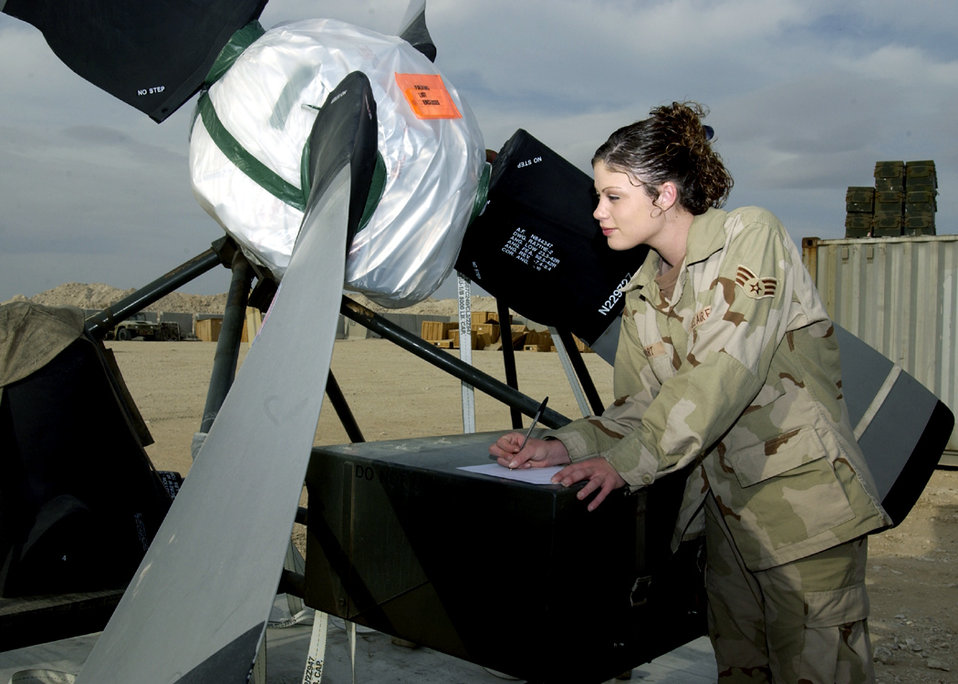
Taking inventory

SOUTHWEST ASIA -- Senior Airman Regina Sewart takes inventory at a forward-deployed location. She is assigned to the 379th Expeditionary Logistics Readiness Squadron and is deployed from Davis-Monthan Air Force Base, Ariz.